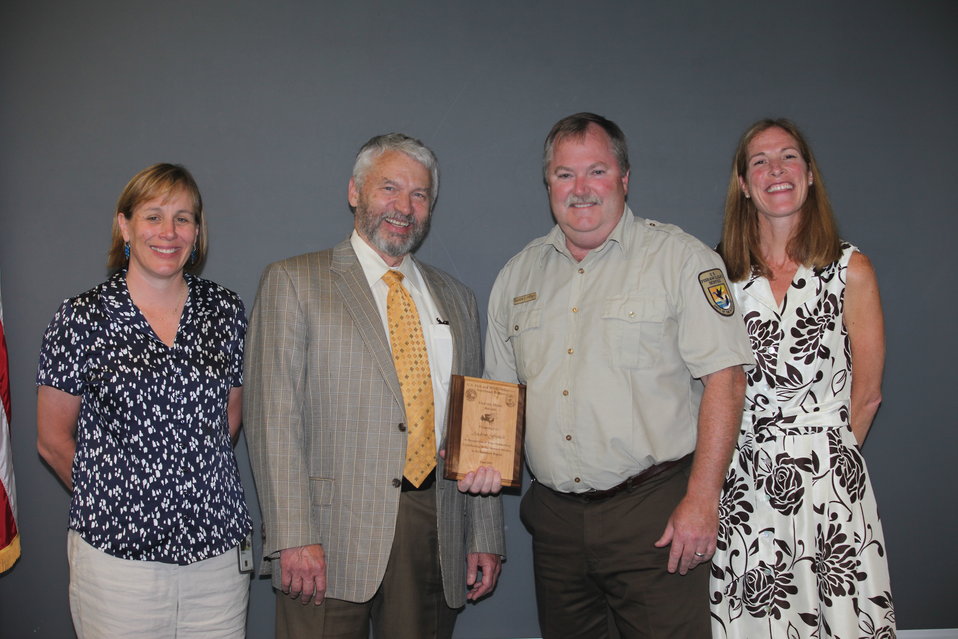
Andrew French, Refuge Manager Silvio O. Conte National Fish and Wildlife Refuge, was awarded a Region 5 Unsung Hero Award.
From left to right: Deputy Regional Director Deb Rocque, Deputy Director Rowan Gould, Darleen Cutting, and Regional Director Wendi Weber